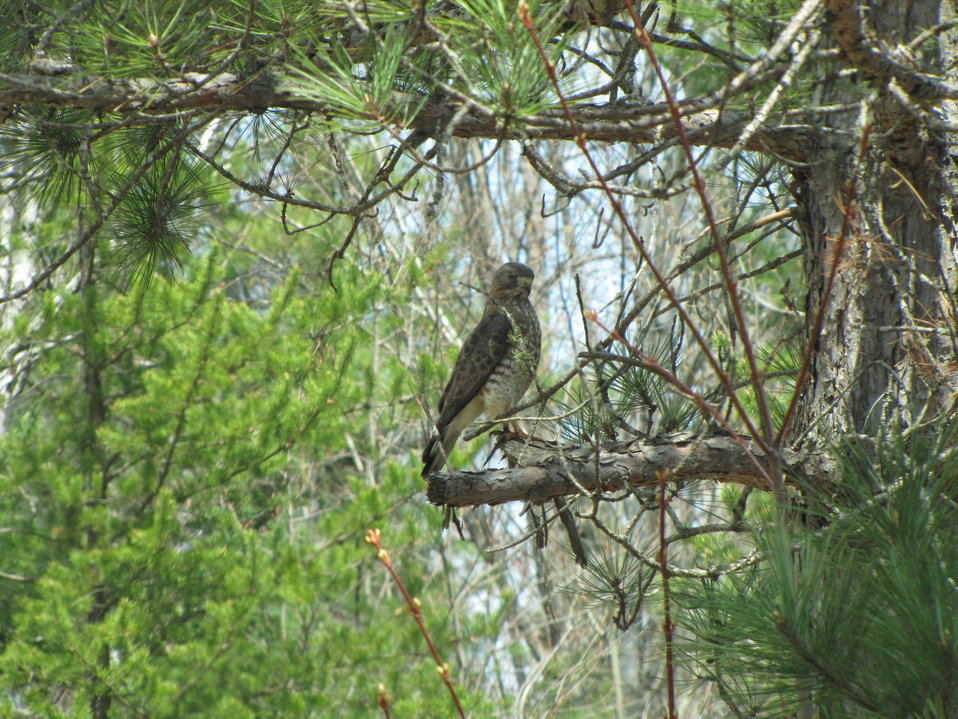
Broad Winged Hawk